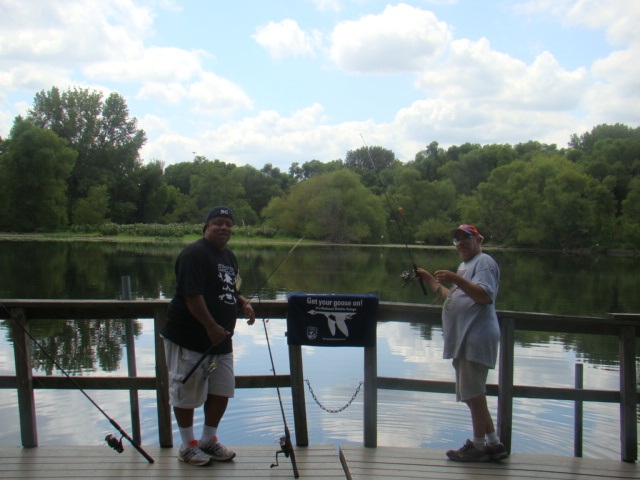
Get Your Goose On!

Fishing for big carp! GYGO! at John Heinz National Wildlife Refuge.